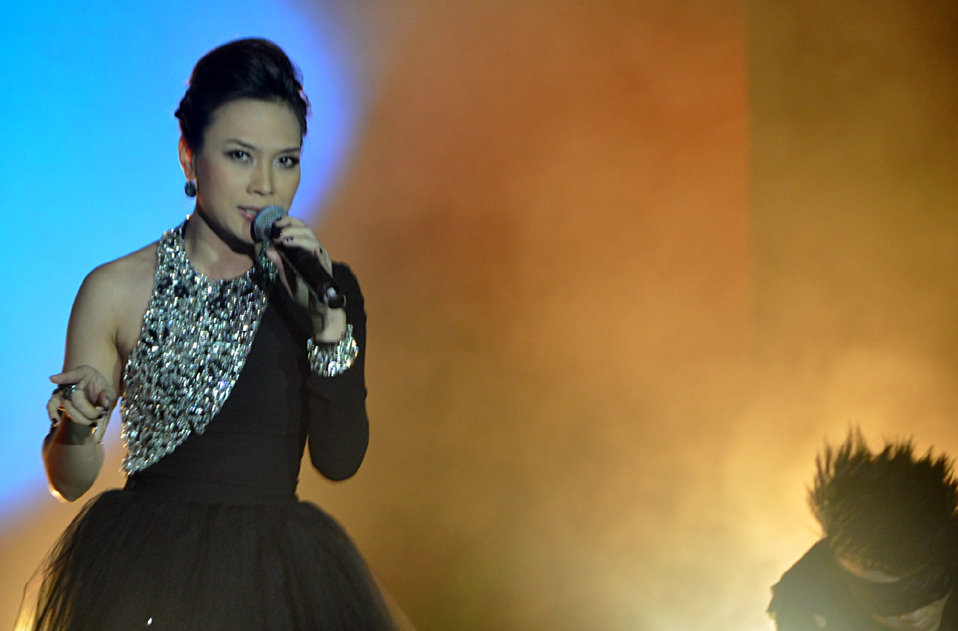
My Tam Performs at MTV EXIT Concert in Hanoi, May 26, 2012